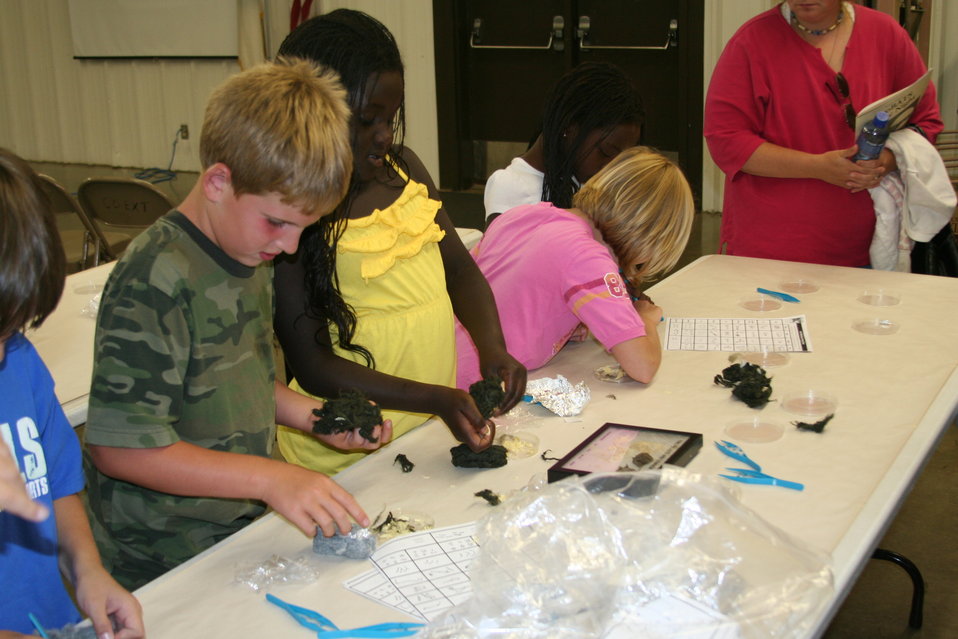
Creatures of the Night 2011